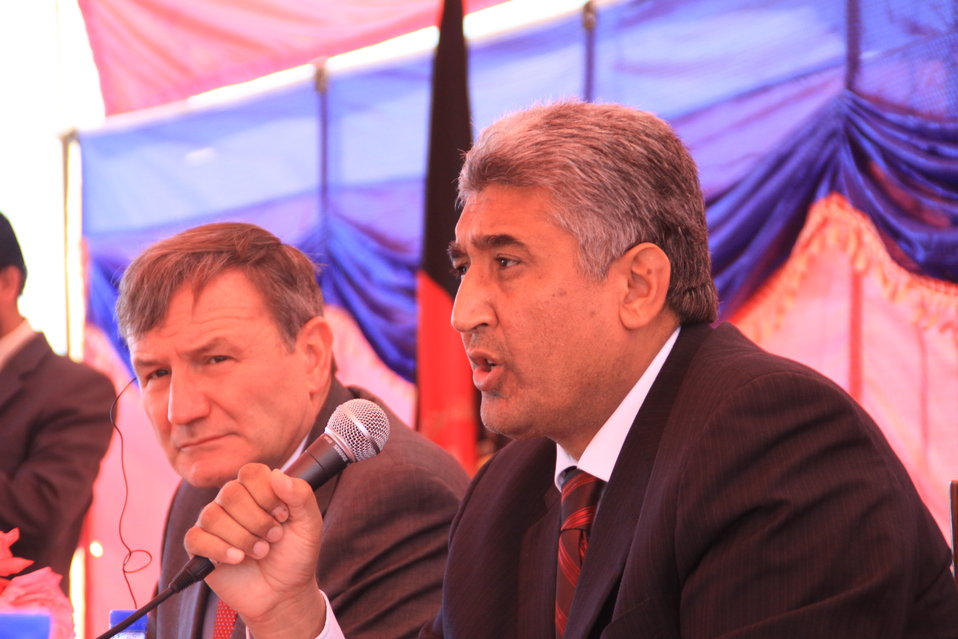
AVIPA Plus Wheat Seed Distribution 101005

US Ambassador Karl Eikenberry and USAID Acting Mission Director Kevin Brownawell joined the Minister of Agriculture, Irrigation and Livestock, H.E. Minister Mohammed Rahimi in signing a Memorandum of Understanding and distributing vouchers to area farmers for wheat and fertilizer.

US Ambassador Karl Eikenberry and USAID Acting Mission Director Kevin Brownawell joined the Minister of Agriculture, Irrigation and Livestock, H.E. Minister Mohammed Rahimi in signing a Memorandum of Understanding and distributing vouchers to area farmers for wheat and fertilizer.